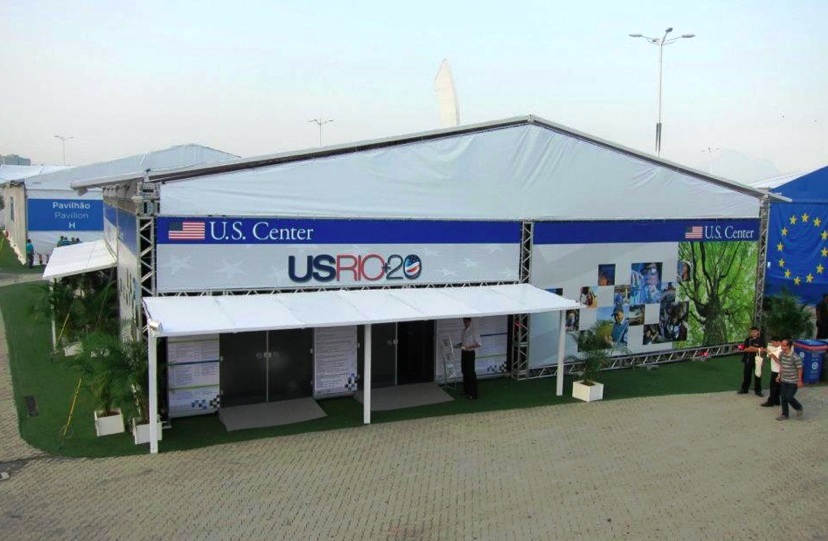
U.S. Center at Rio 2.0

The U.S. Center at the UN Conference on Sustainable Development (Rio 20) is shown in Rio de Janeiro, Brazil, on June 15, 2012.